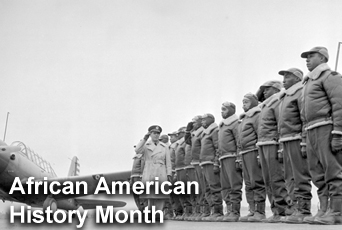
Air Force celebrates African American History Month

National African-American History Month is traditionally celebtrated during the month of February. Activities and events are held throughout the month to commemorate the contributions to the nation made by people of African descent.